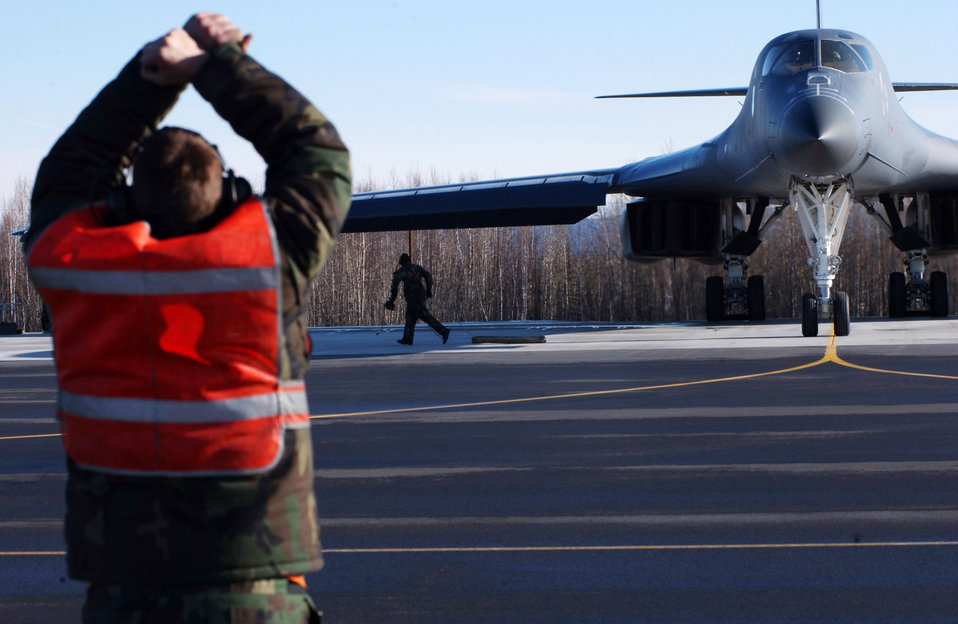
Air combat ready at Red Flag-Alaska

Senior Airman Michael Anderson marshals a B-1B Lancer April 13 at Eielson Air Force Base, Alaska, during Red Flag-Alaska 07-1. Red Flag-Alaska is a Pacific Air Forces-directed field training exercise for U.S. forces flown under simulated air combat conditions. It is conducted on the Pacific Alaskan Range Complex with air operations flown out of Eielson and Elmendorf Air Force Bases. Airman Anderson is assigned to the 28th Aircraft Maintenance Squadron at Ellsworth AFB, S.D.